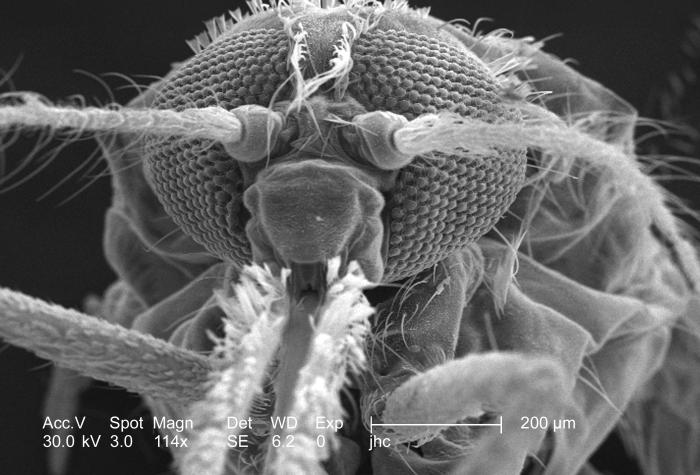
At a magnification of 114x, this scanning electron micrograph (SEM) revealed some of the morphologic features displayed on the exoskeletal surface of an Anopheles gambiae mosquito's anterior head region. Included in this field of view were the two bilaterally located antennae, the proboscis, two maxillary palps, and the clypeus, to which the aforementioned structures are attached. Also note the two bilateral multifaceted compound eyes.